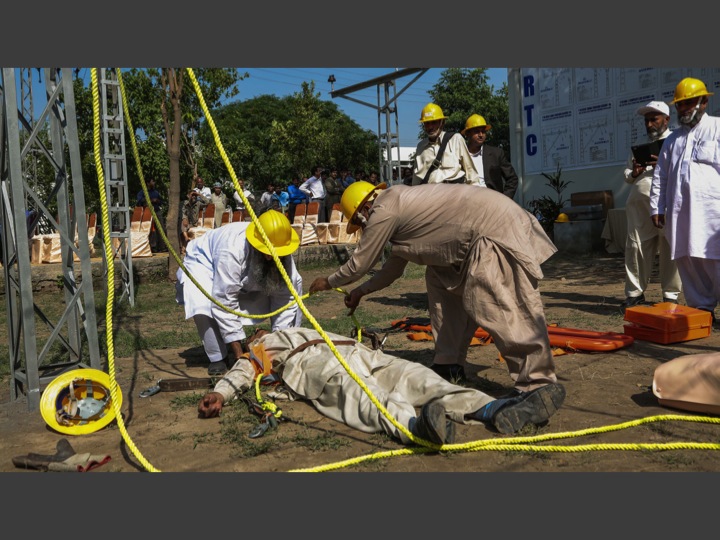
Linemen demonstrating the skills and techniques learnt from training4